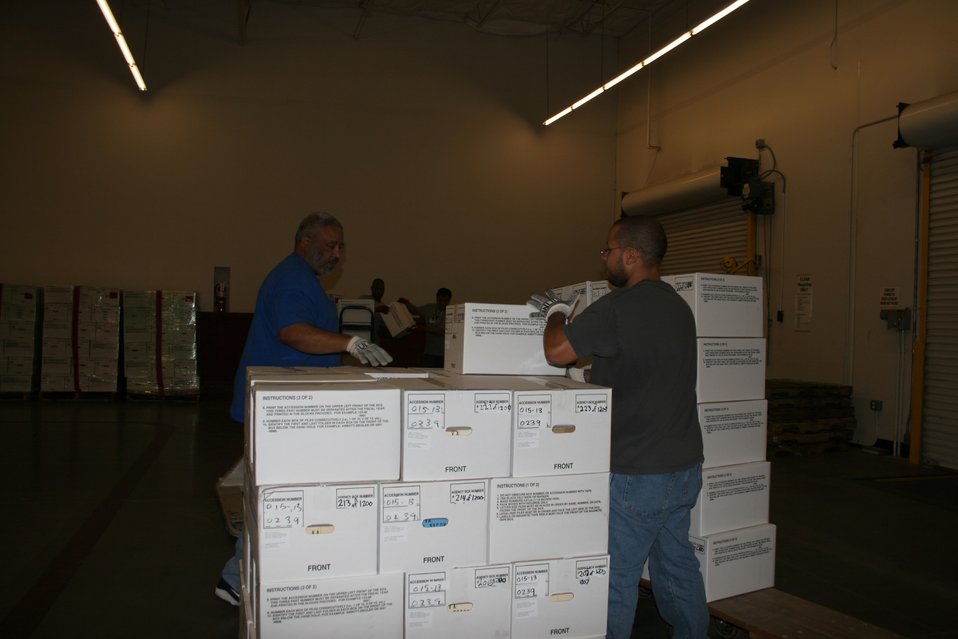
Staff bringing in new transfers of customer agency records - (l to r) Hillery L. Sheppard, Elton R. McLeod, Glenn F. Fernando, Jason L. Brandon; Location: Riverside Federal Records Center, Perris, CA